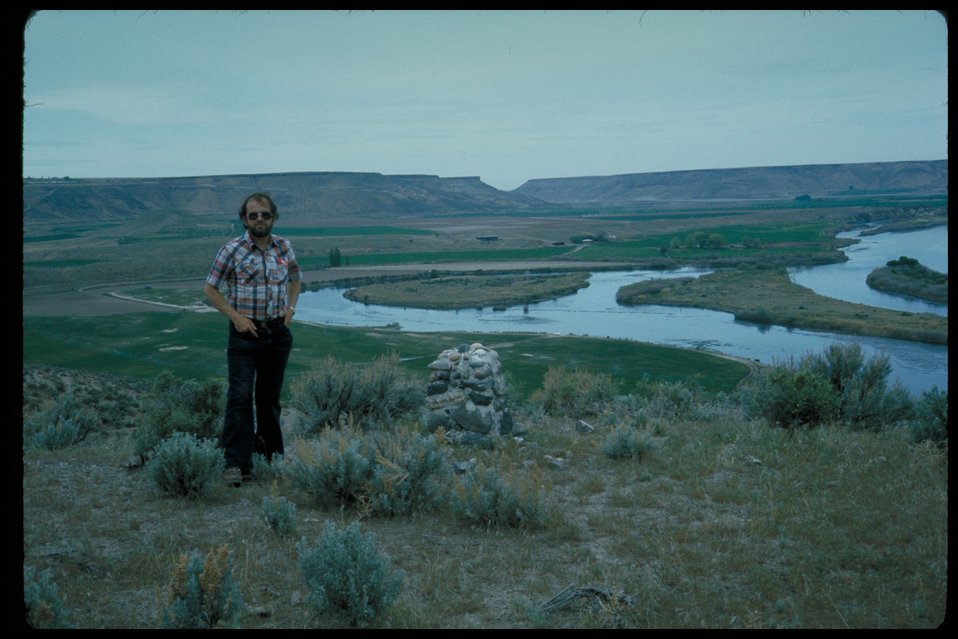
Grave marker south of Three Islands Oregon Trail Lower Snake River District